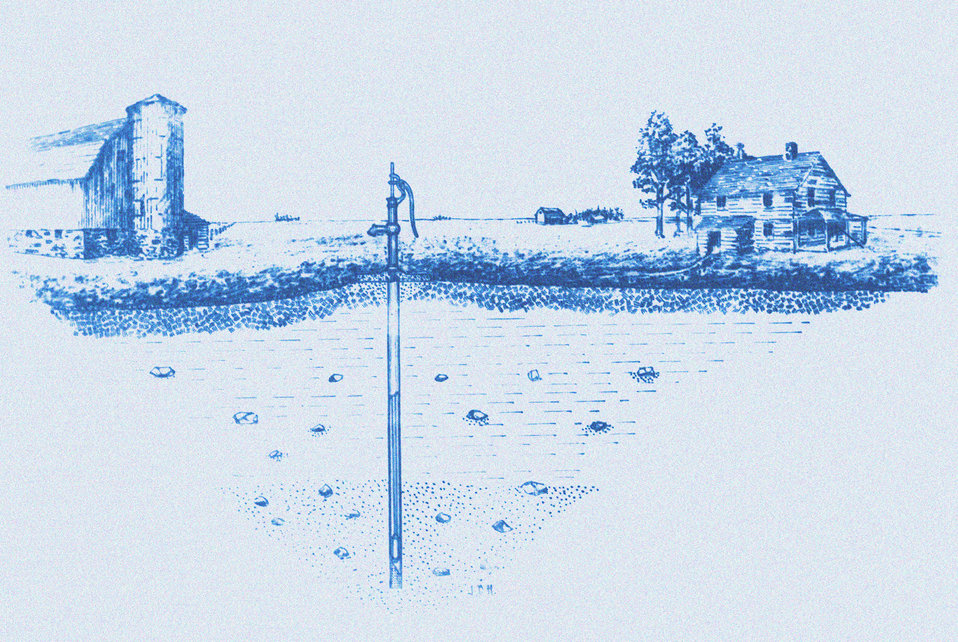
This historic diagram, which had been digitally enhanced and colorized, depicted a properly constructed 'bored' type well that had been protected against pollution due to the safe proximity at which possible contaminating sources resided. Published in 1915, this was one of a series of instructional drawings used by the Minnesota Board of Health to train its state public health workers.